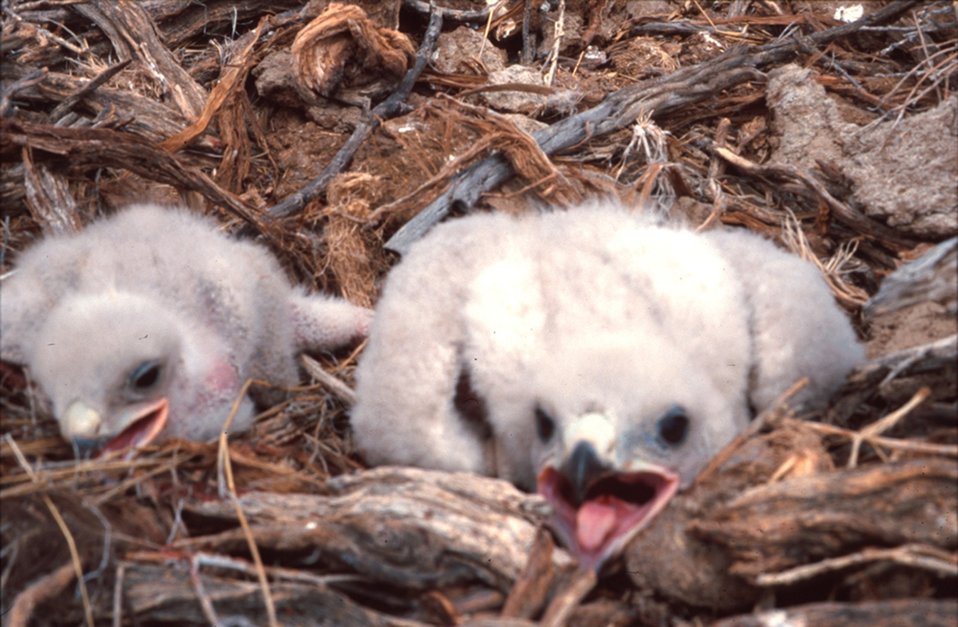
Ferrugenous Hawk hatchlings Owyhee Field Office LSRD Lower Snake River District